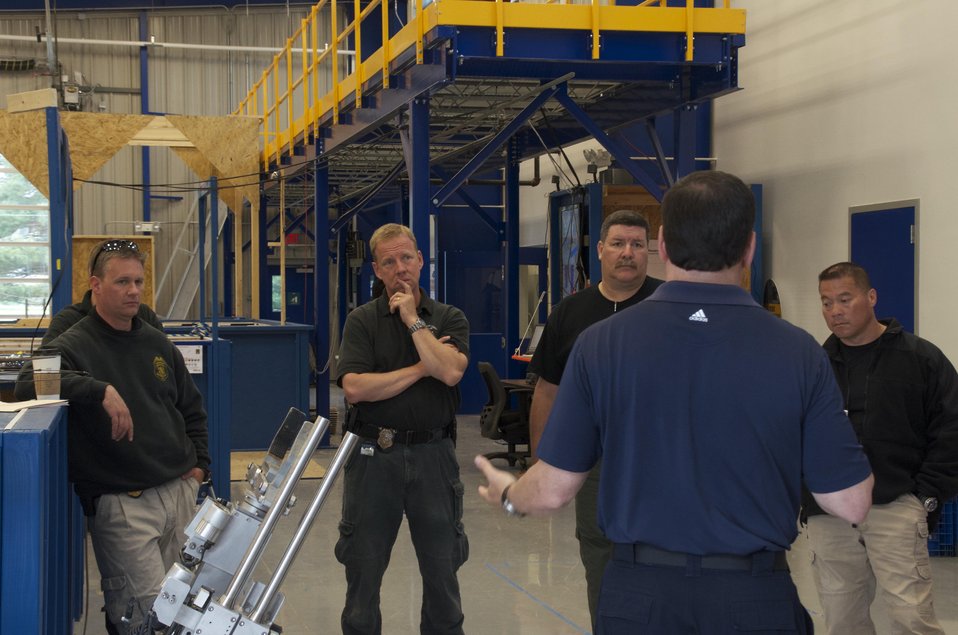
Bomb Squad

Montgomery County Bomb Squad members prepare for a day in the NIST Robot Test Facility where they will use NIST-developed standard test methods for emergency response robots. These methods objectively evaluate robot performance and support development of advanced mobile robot capabilities.

Development of test methods at the NIST Robot Test Facility is funded in part by the NIST Office of Law Enforcement Standard's Counterterrorism and Response Technologies program.